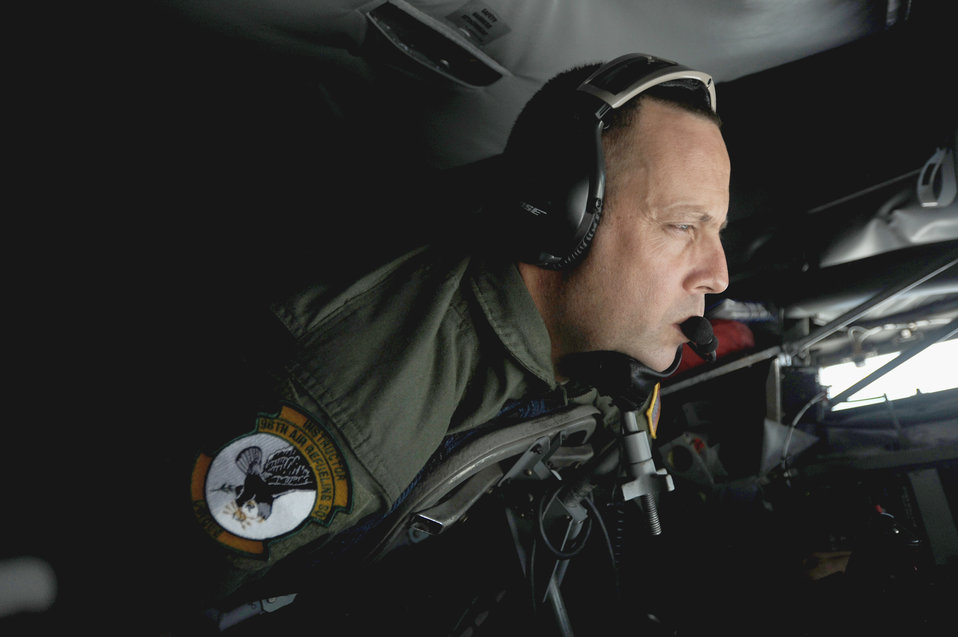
C-17 refuels over the Pacific

Senior Master Sgt. Dicky Hunt transfers fuel through the KC-135 Stratotanker's boom to a C-17 Globemaster III during a refueling mission Sept. 18, 2010, over the Pacific Ocean. They performed a refueling mission with a C-17 bound for Andersen Air Base, Guam. Sergeant Hunt is a boom operator with the 96th Air Refueling Squadron.